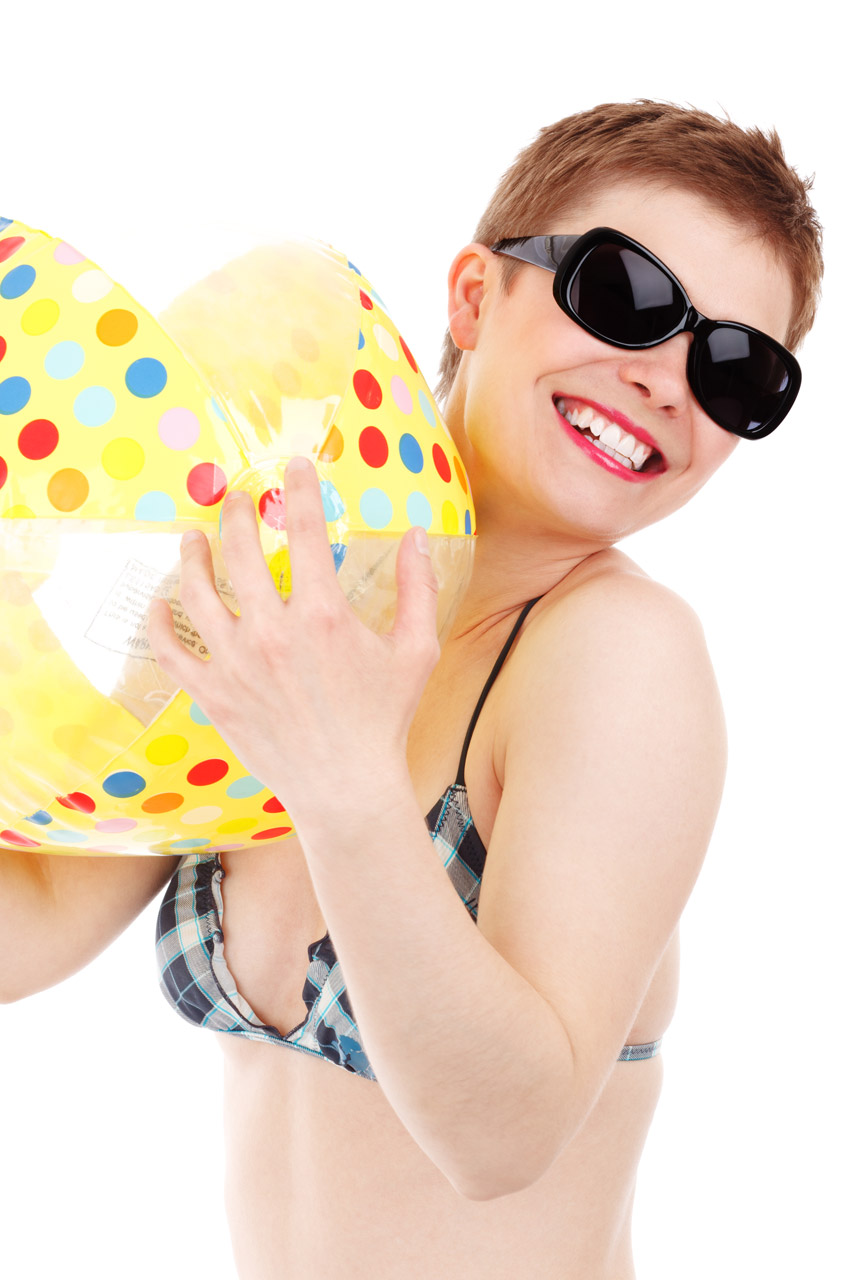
Girl in swimsuit with beach ball

Young woman in bikini with a beach ball and dark sunglasses isolated on white background.